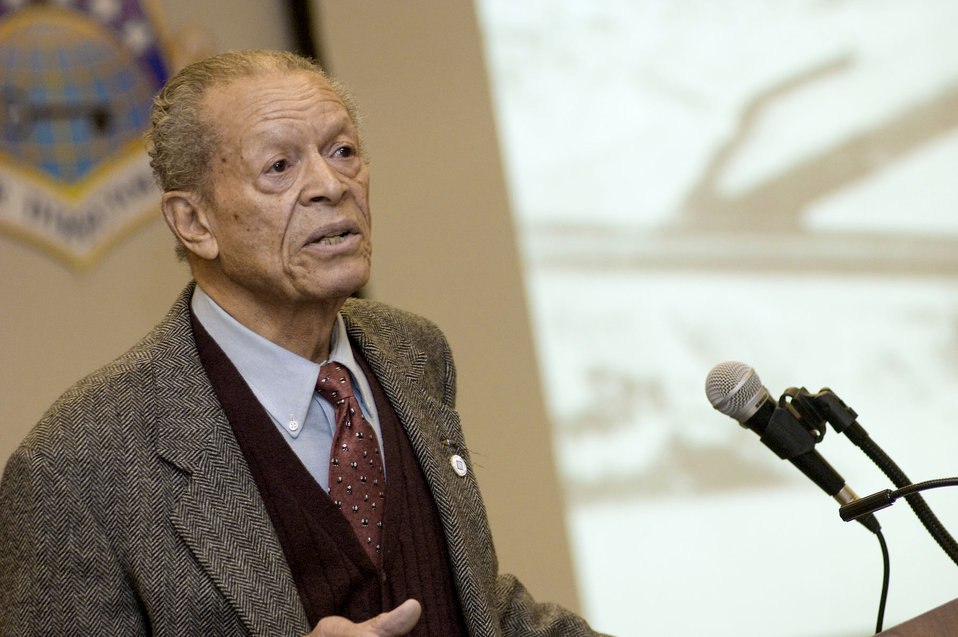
James Sheppard

Mr. James Shappard, an original Tuskegee Airmen speaks about his experience in the military during World War II to over 60 Hanscom personnel in bldg. 1614 in the Garden Auditorium.